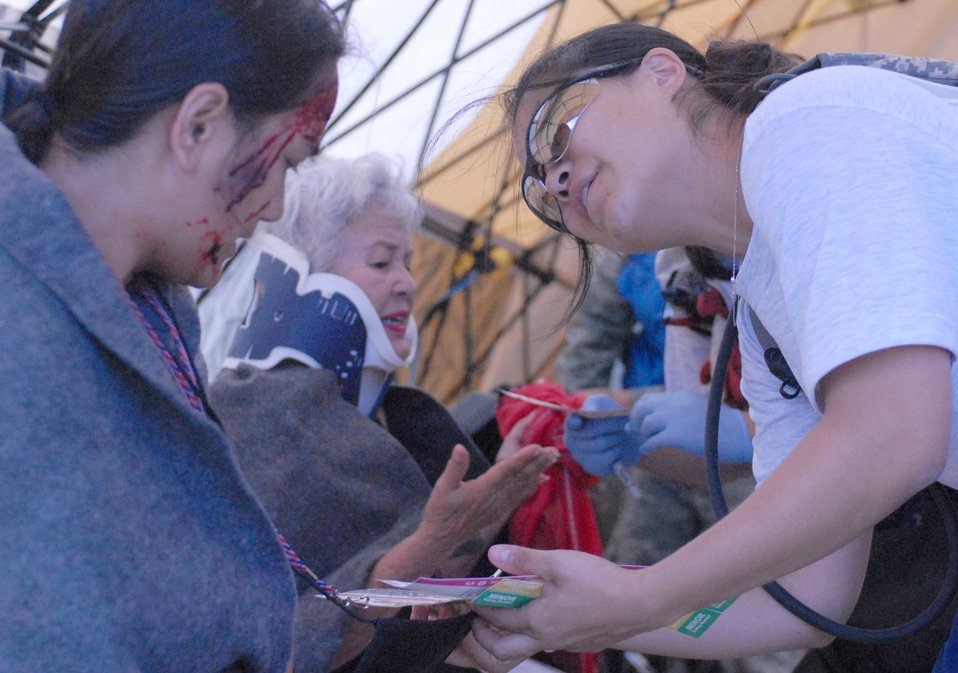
Hawaii National Guard all-hazards response team earns validation

An Airman from the Hawaii Air National Guard's 154th Medical Group assists a